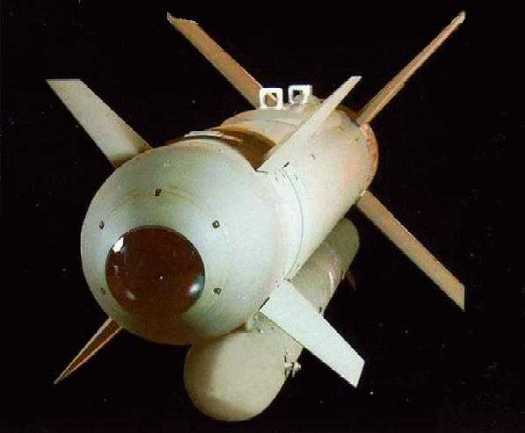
AGM-130 MISSILE